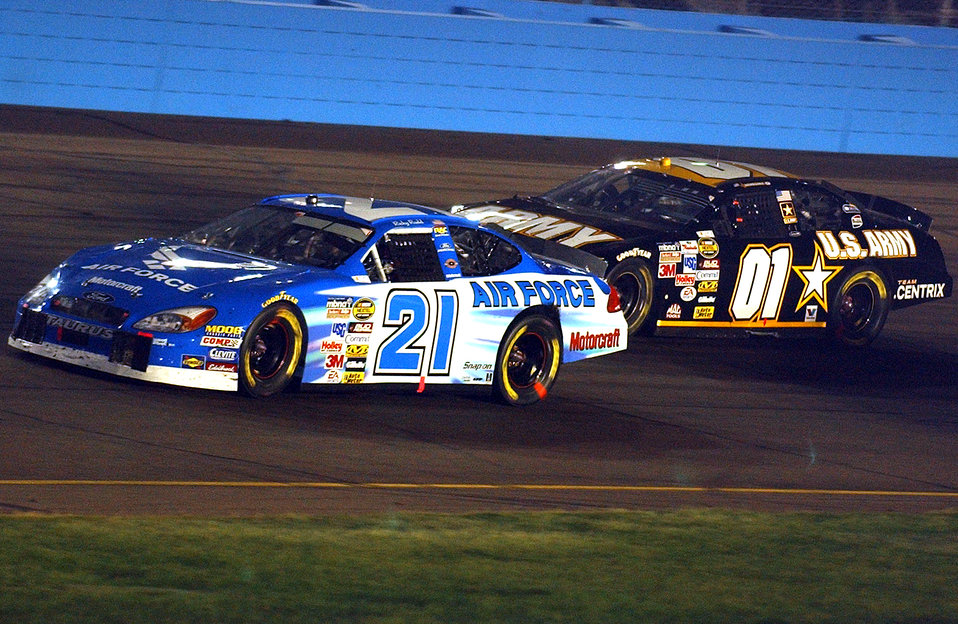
Racing by

PHOENIX -- Ricky Rudd, driver of the Air Force Wood Brothers Racing No. 21, battles Joe Nemechek, driver of the U.S. Army car during a race at the Phoenix International Raceway. Nemechek came in 10th place, and Rudd came in 34th.